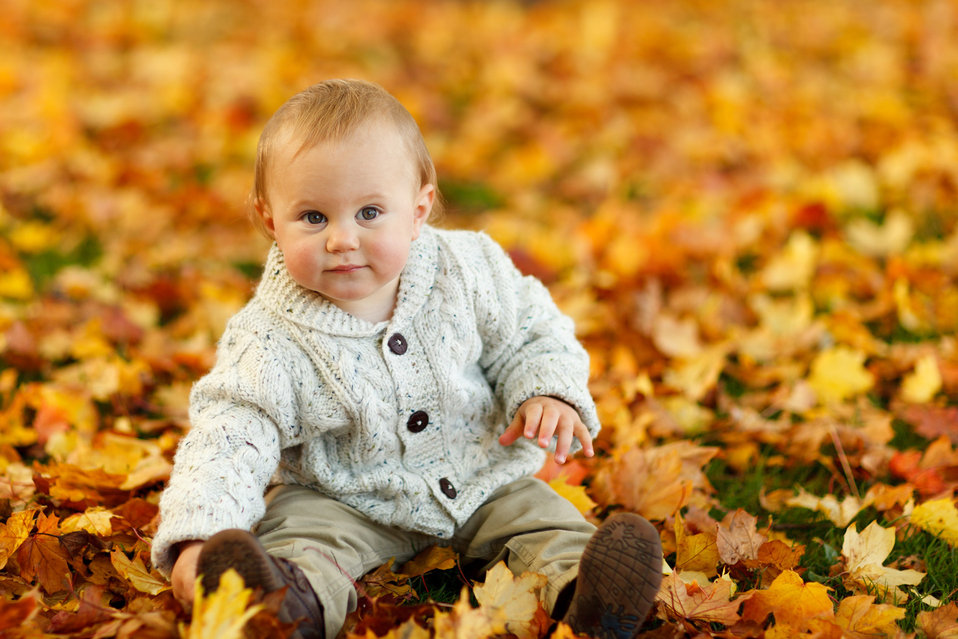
Boy in park in autumn

Young baby boy sitting in the park and playing with yellow leaves in autumn.